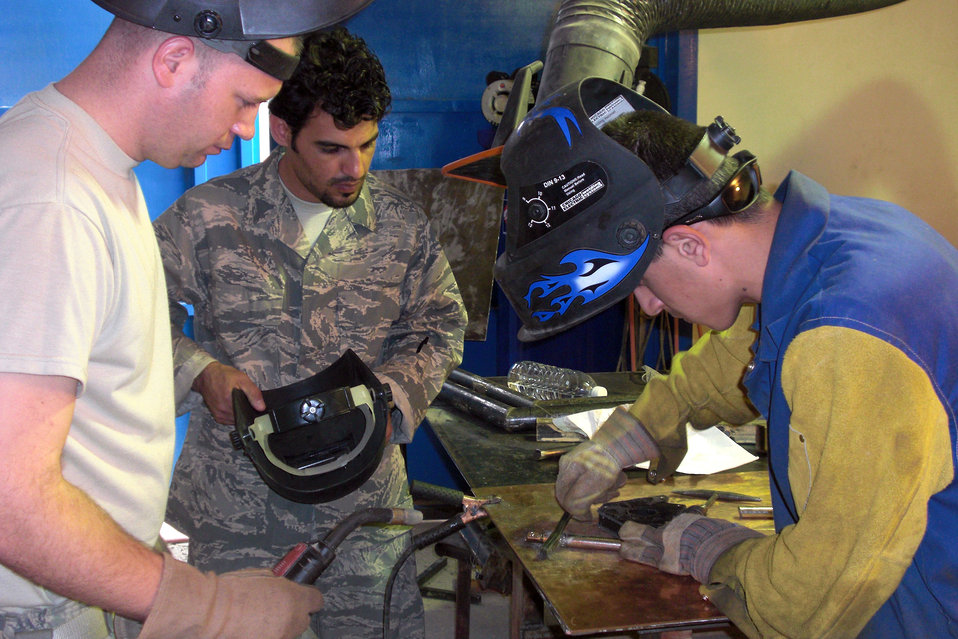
Airmen train Iraqi maintainers

Technical Sgt. Bobby McKenzie (left) and an Iraqi interpreter look on while an Iraqi machinist fabricates a torque tool for C-130 main landing gear brakes March 24 at Camp Taji, Iraq. Sergeant McKenzie took three Iraqi air force members to Camp Taji to help better cross utilize their resources and also fix an Iraqi C-130s. Sergeant McKenzie is a 321st Air Expeditionary Advisory Squadron aircraft structural maintenance adviser. He is deployed from Little Rock Air Force Base, Ark., and is a native of Manchester, Tenn.